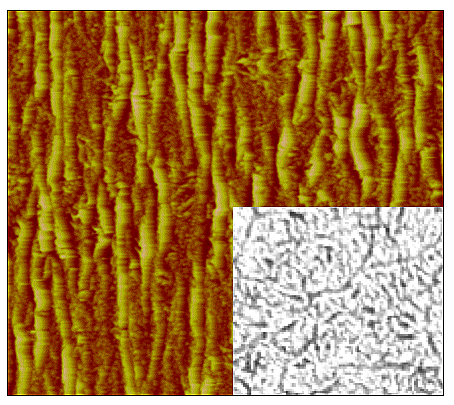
Nanotube Coating; Solar Cells; SWCNTs

This atomic-force microscopy image shows wrinkling in a single-wall carbon nanotube membrane; the inset shows an optical reflection micrograph of the membrane without any strain. The random arrangement of the nanotubes shown in the inset creates conductivity, but wrinkling can disrupt that. Each image is 40 micrometers in width.